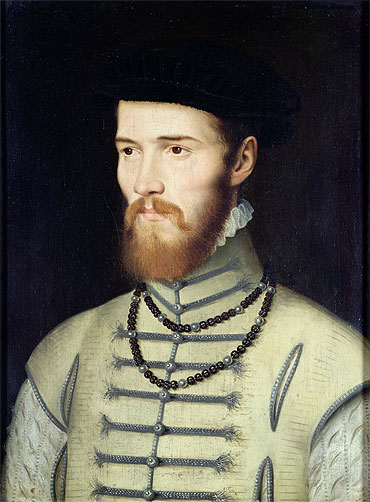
Clouet Portrait of a man Don Juan